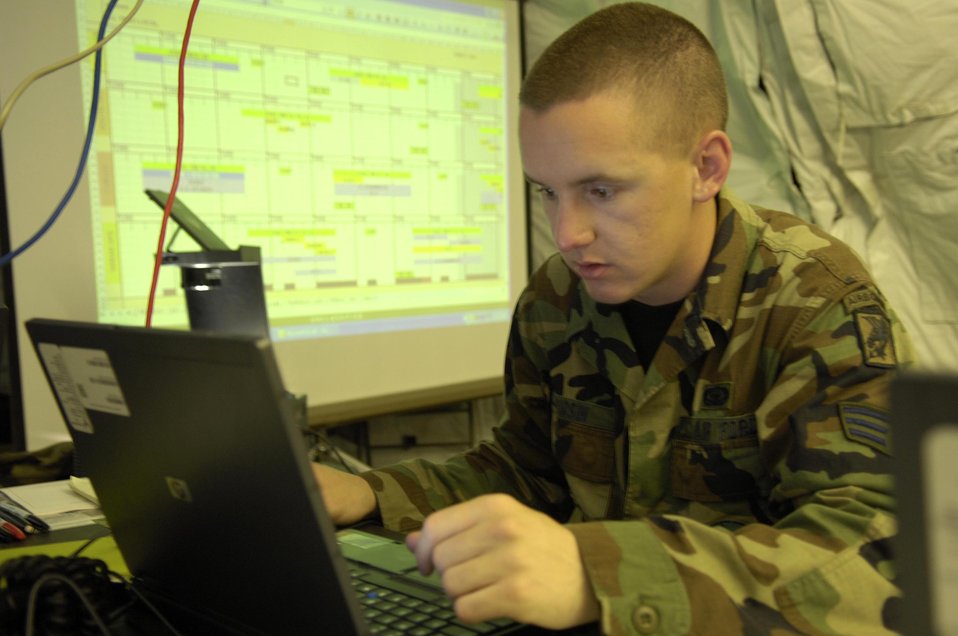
Air Support Ops keep control at Atlantic Strike V

Senior Airman Grant Hursin, a Tactical Air Control Party member, reviews intelligence collected from the previous day's missions April 18 to piece together a new, current briefing for Atlantic Strike V. Airman Hursin is assigned to the 682nd Air Support Operations Squadron at Shaw Air Force Base, S.C. Atlantic Strike is a semi-annual joint forces training event involving Joint Terminal Attack Controllers from the Air Force, Army and Marines. The event is held at Avon Park Air Ground training Complex in Avon Park, Fla.